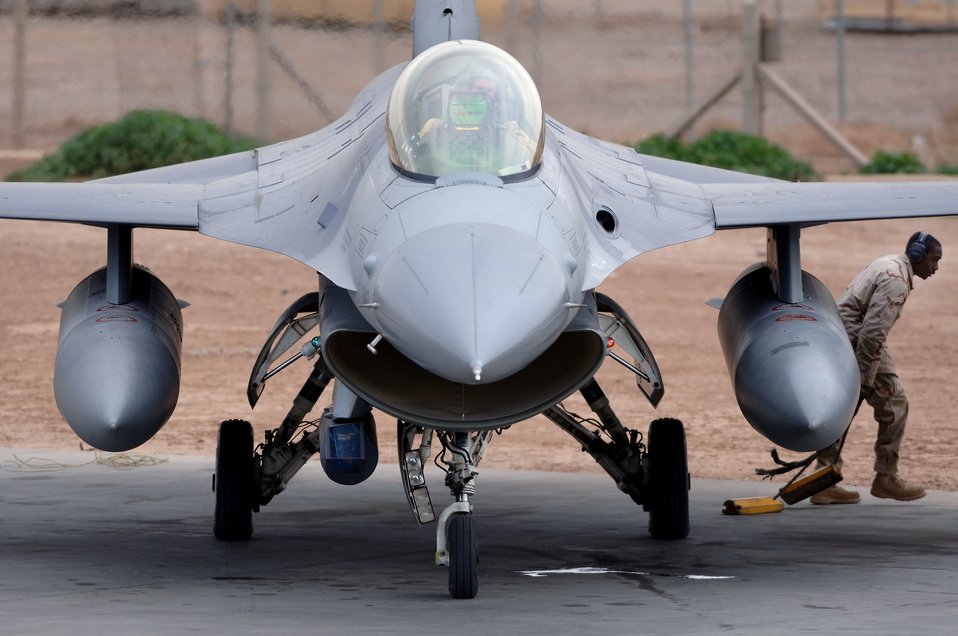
Falcons ready to leave the nest

Airman 1st Class Stephen Tyler pulls the chocks and moves away from an F-16 Fighting Falcon before a mission Feb. 13 from Balad Air Base, Iraq. Airman Tyler is assigned to the 332nd Expeditionary Aircraft Maintenance Squadron from Aviano Air Base, Italy.